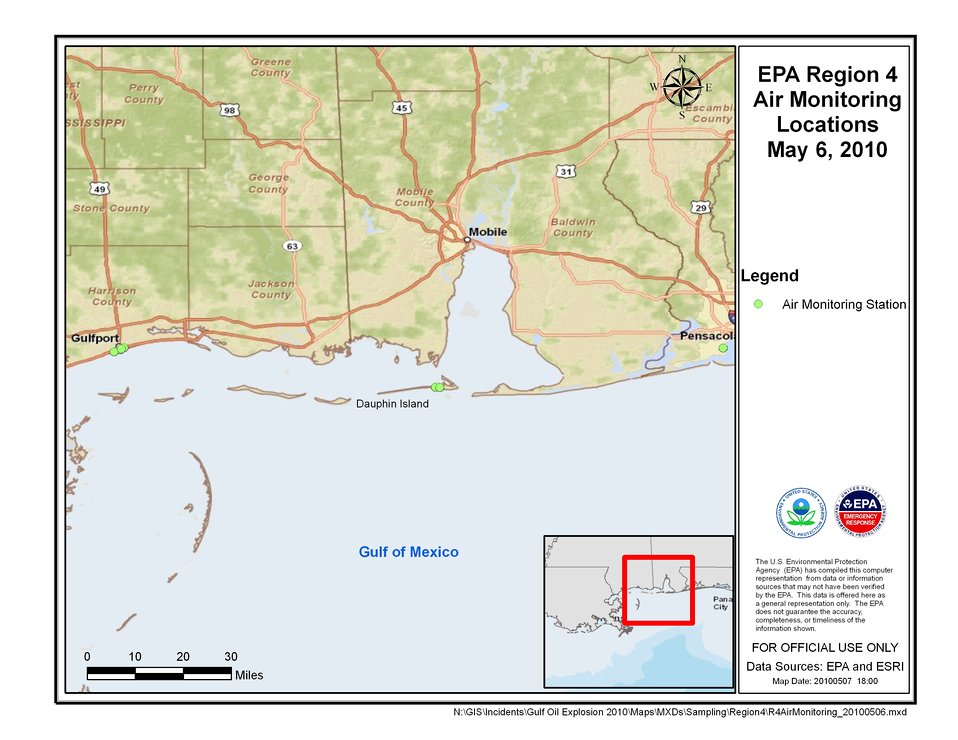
EPA Air Monitoring Locations May 6, 2010